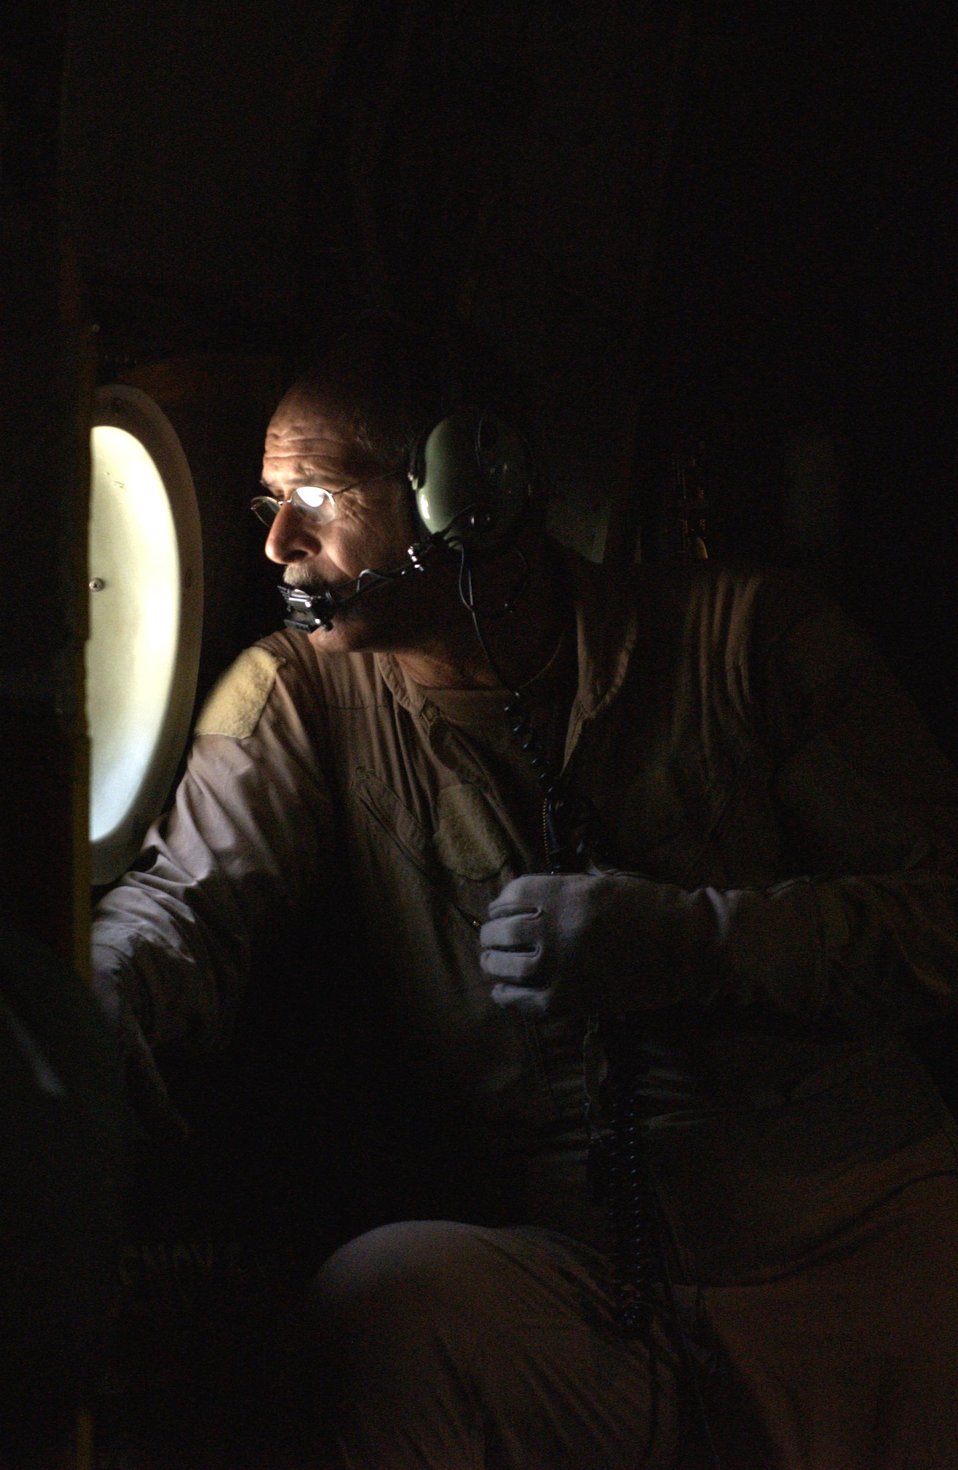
Guardsmen making K-2 connections

OVER AFGHANISTAN -- Loadmaster Master Sgt. Stanley Johnson scans the terrain of northern Afghanistan as the C-130 Hercules he is flying in passes over mountains. Sergeant Johnson is deployed from the Missouri Air National Guard to Uzbekistan, supporting Operation Enduring Freedom.